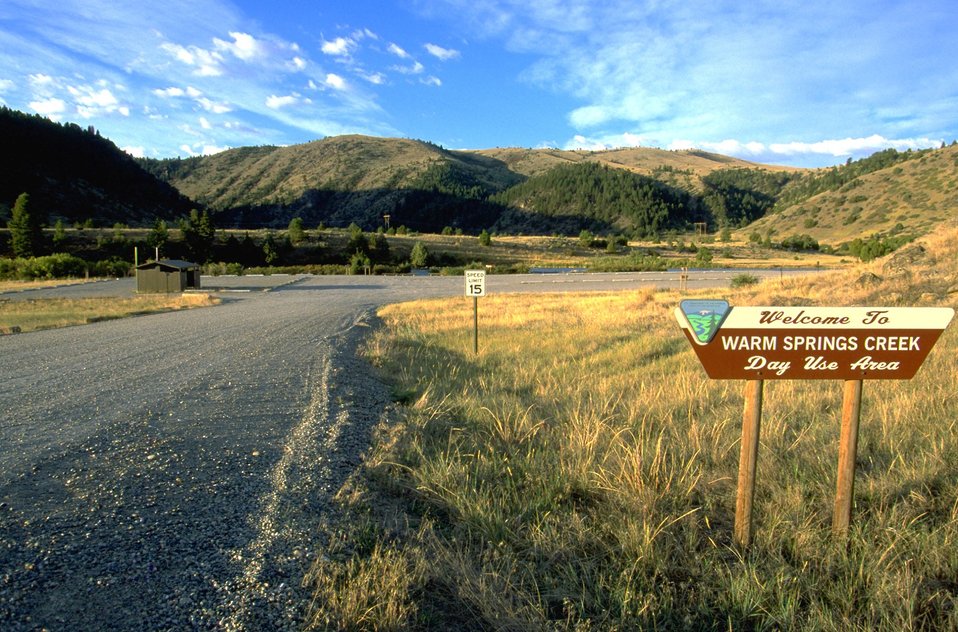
Entrance to Warm Springs Day Use Area